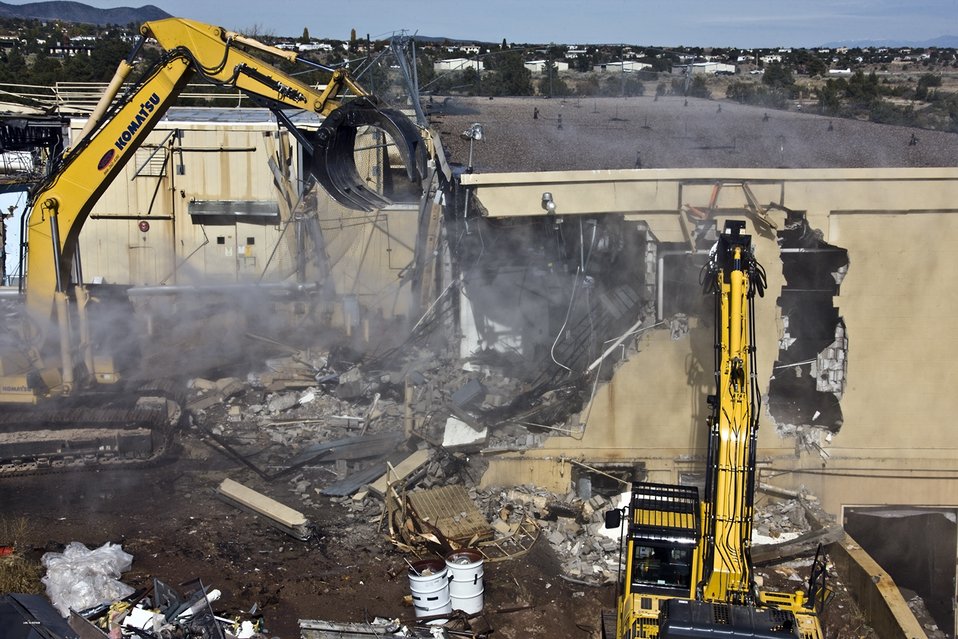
Building 21-150 Demolition

Building 21-150 was the final building demolished at Los Alamos National Laboratory’s historic DP West, which was the world’s only plutonium processing facility immediately following World War II.